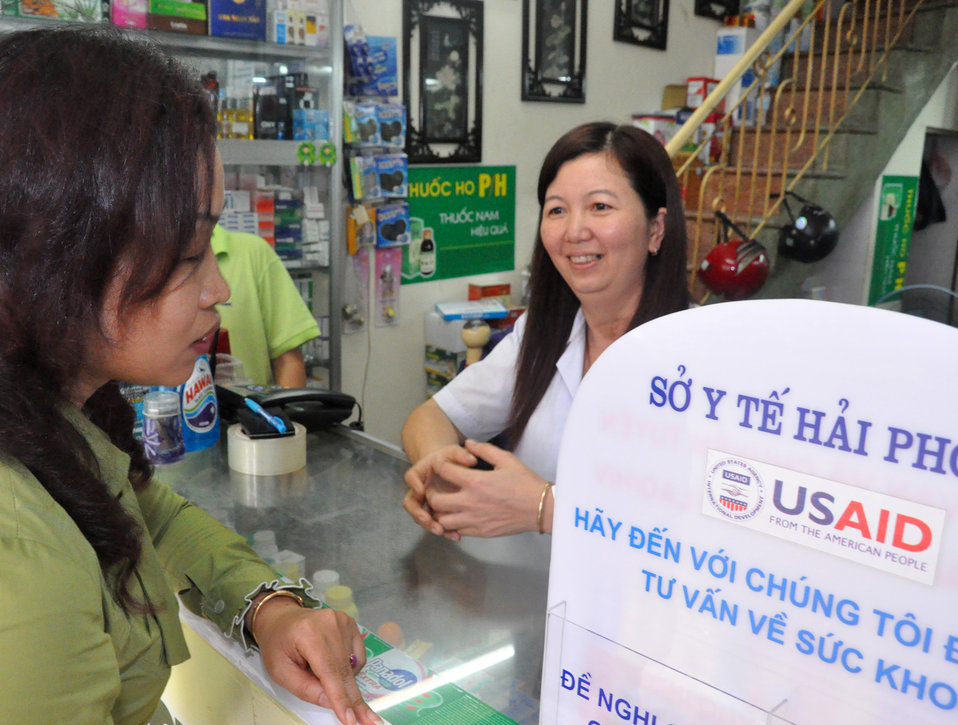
Pharmacies take part in TB referral services with the support of a USAID program